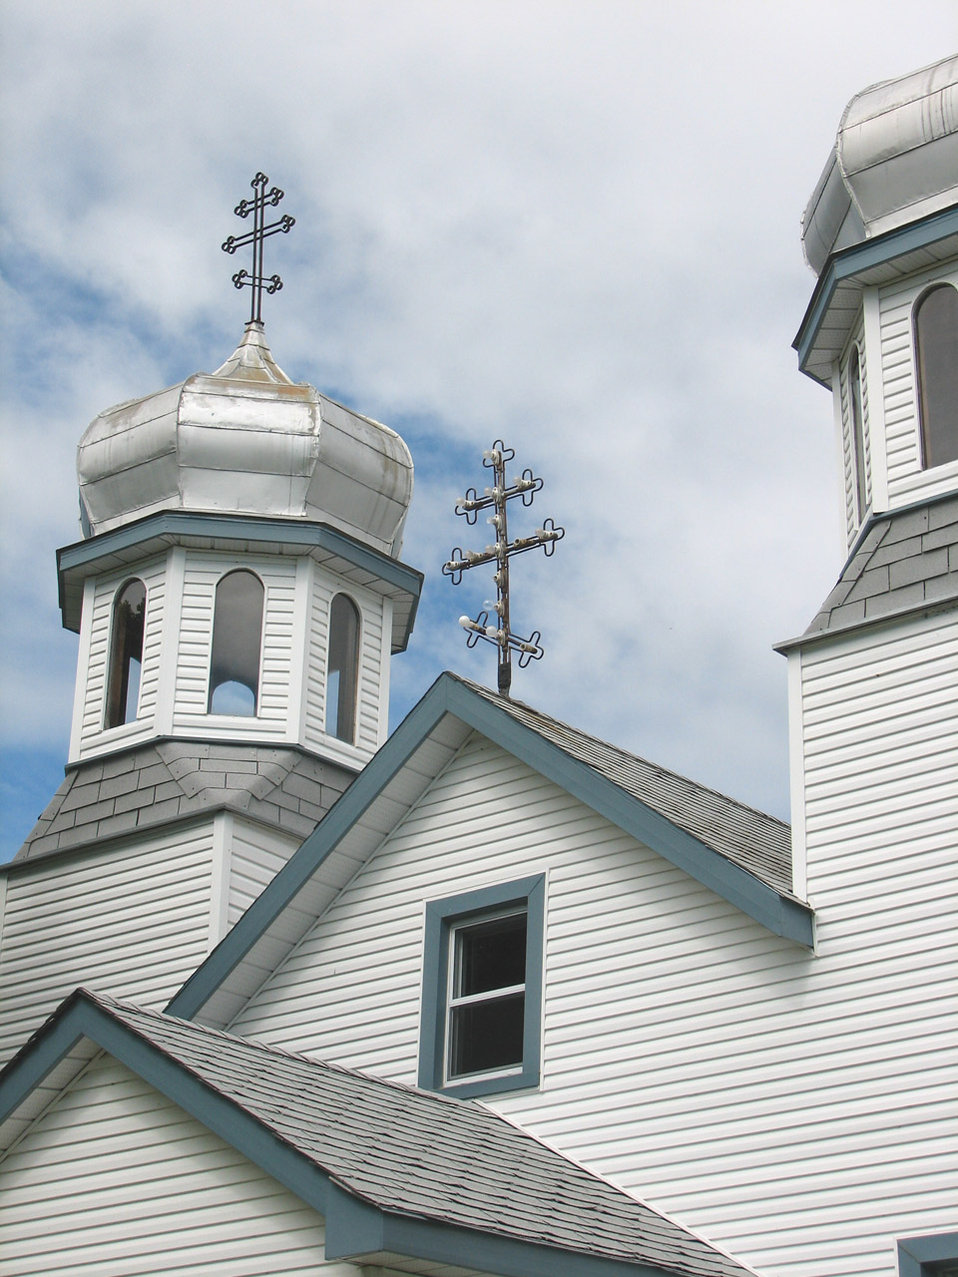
Church crosses

Beautiful roof top crosses.